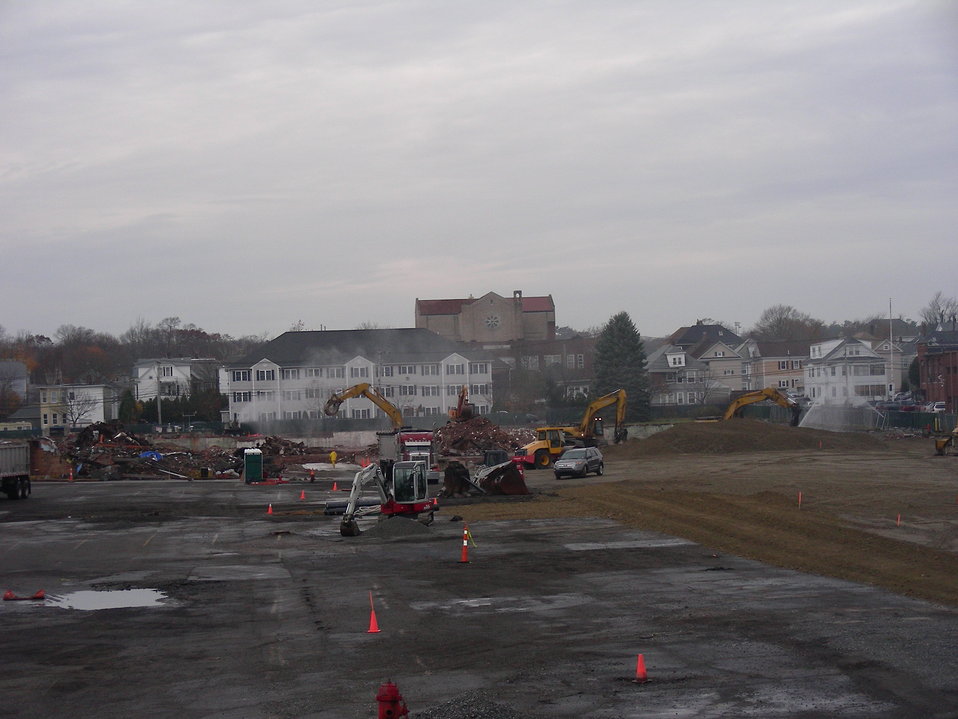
November 14, 2011 The Aerovox Mill demolition is nearly complete!

EPA's foremost concern at the Aerovox site had been the risk of fire that could have caused the release of PCBs and other hazardous materials into neighboring communities.

Now that the building has safely been demolished, nearby residents can benefit from a safer environment and a better view of the harbor.